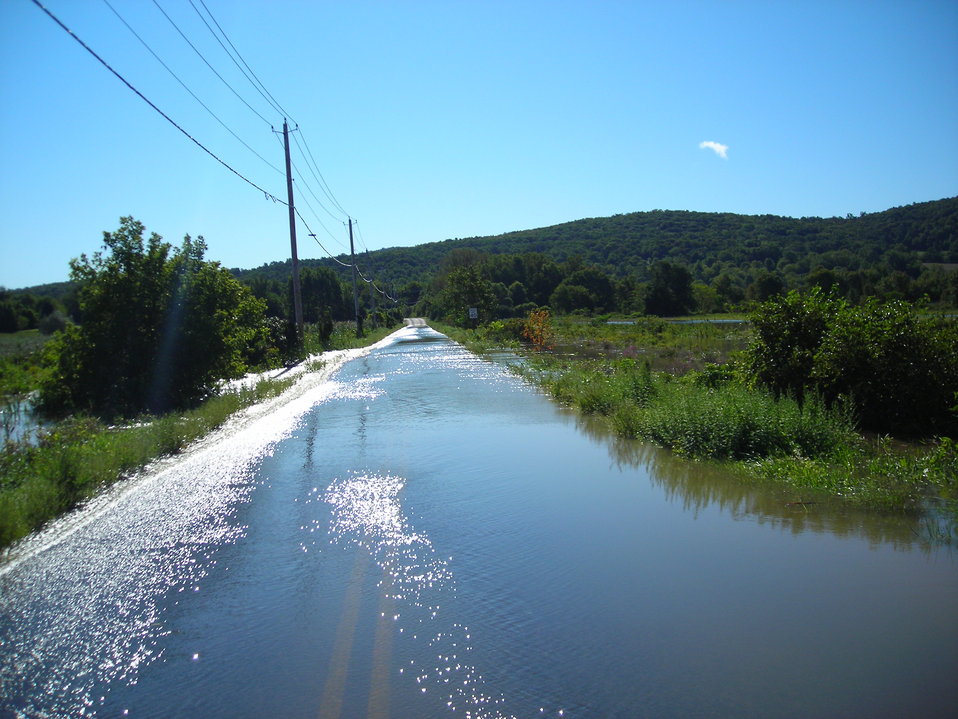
Hurricane Damage at Wallkill River National Wildlife Refuge August 30, 2011

Flooding at Liberty Loop Trail and impoundments, Sussex, NJ.